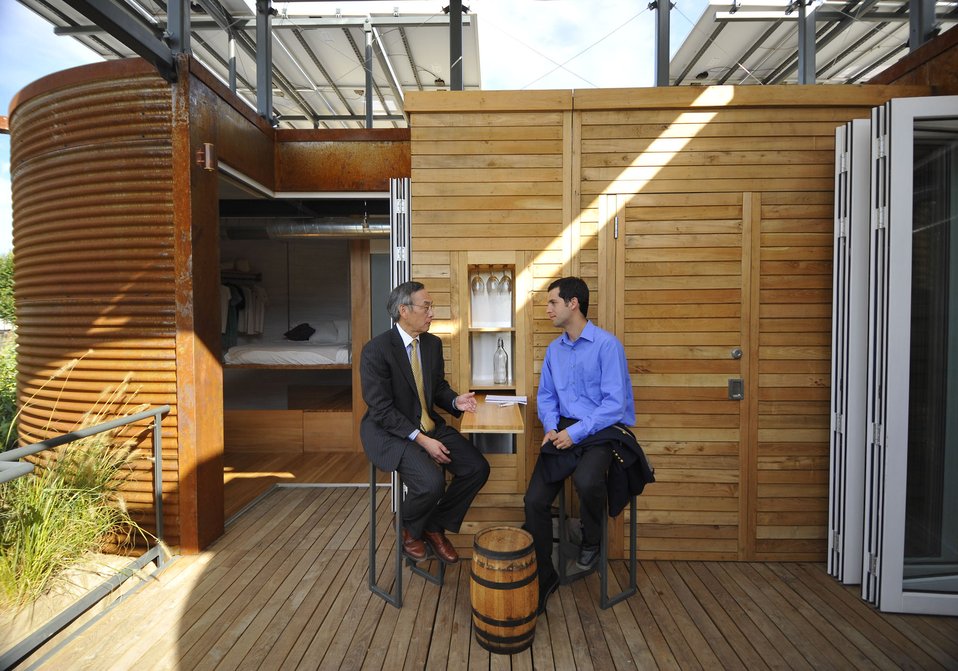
Solar Decathlon 2009 on the National Mall, with Sec. Chu

Solar Decathlon 09